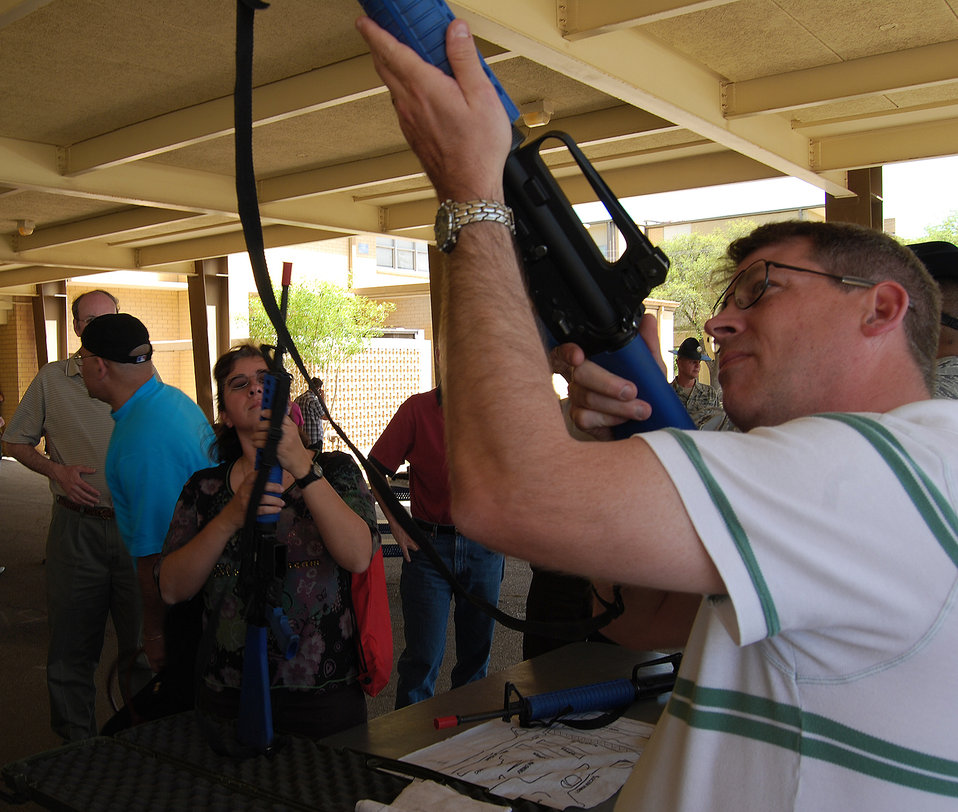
Retired airmen called back to duty

Retired Air Force majors and master sergeants take part in the 2009 Push-Pull exercise at Lackland Air Force Base, Texas. The exercise tested the ability of Air Force officials to recall retired Airmen with specific skills should their expertise be needed in the future.